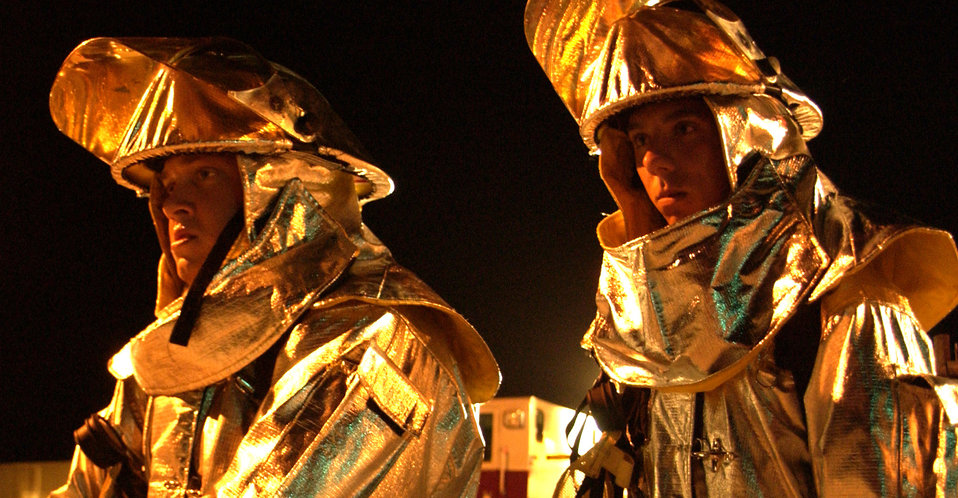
Exercise at Andersen

Airman 1st Class Kyle Houseman (left) and Airman Basic Mark Maslowski respond to a simulated vehicle accident at Andersen Air Force Base, Guam, during the Beverly Palm 06-07 exercise on July 10. The exercise is held several times a year to sharpen the mobility and wartime capabilities of Airmen. The Airmen are assigned to the 36th Civil Engineer Squadron.